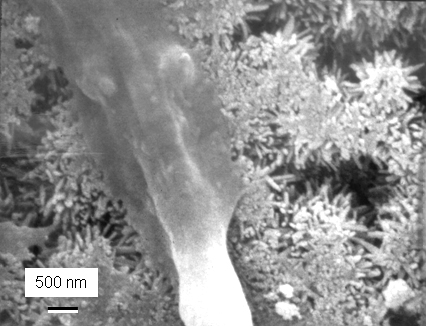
Layered Approach May Yield Stronger, More Successful Bone Implants

High-magnification scanning electron microscopy shows (center of micrograph) the leg of an osteoblast (bone precursor), called a cytoplasmic extension, attaching to nano-sized hydroxyapatite crystals, similar to those in natural bone, that make up a CPC implant.